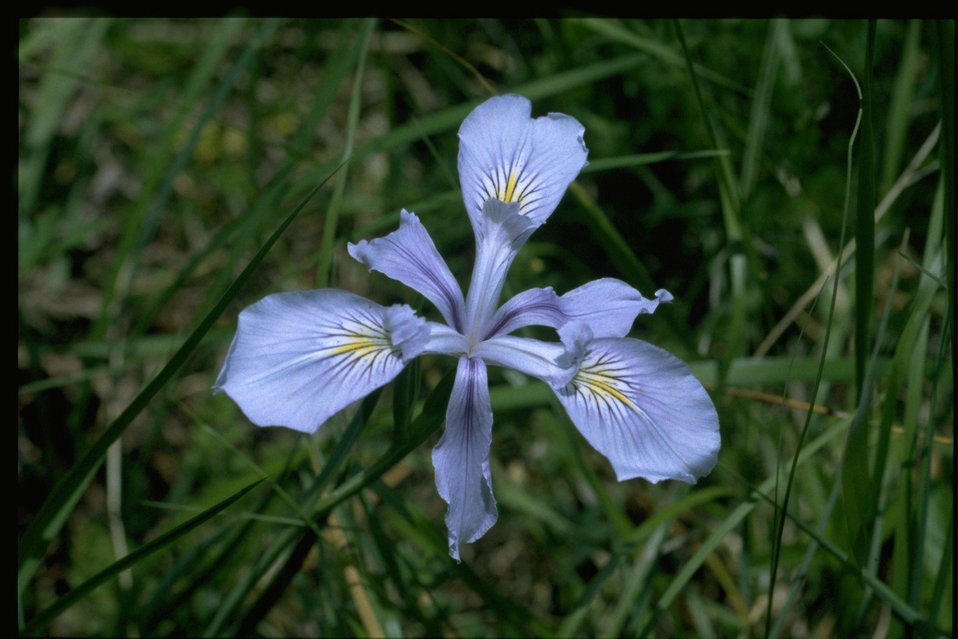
Medium shot of Iris tenax.